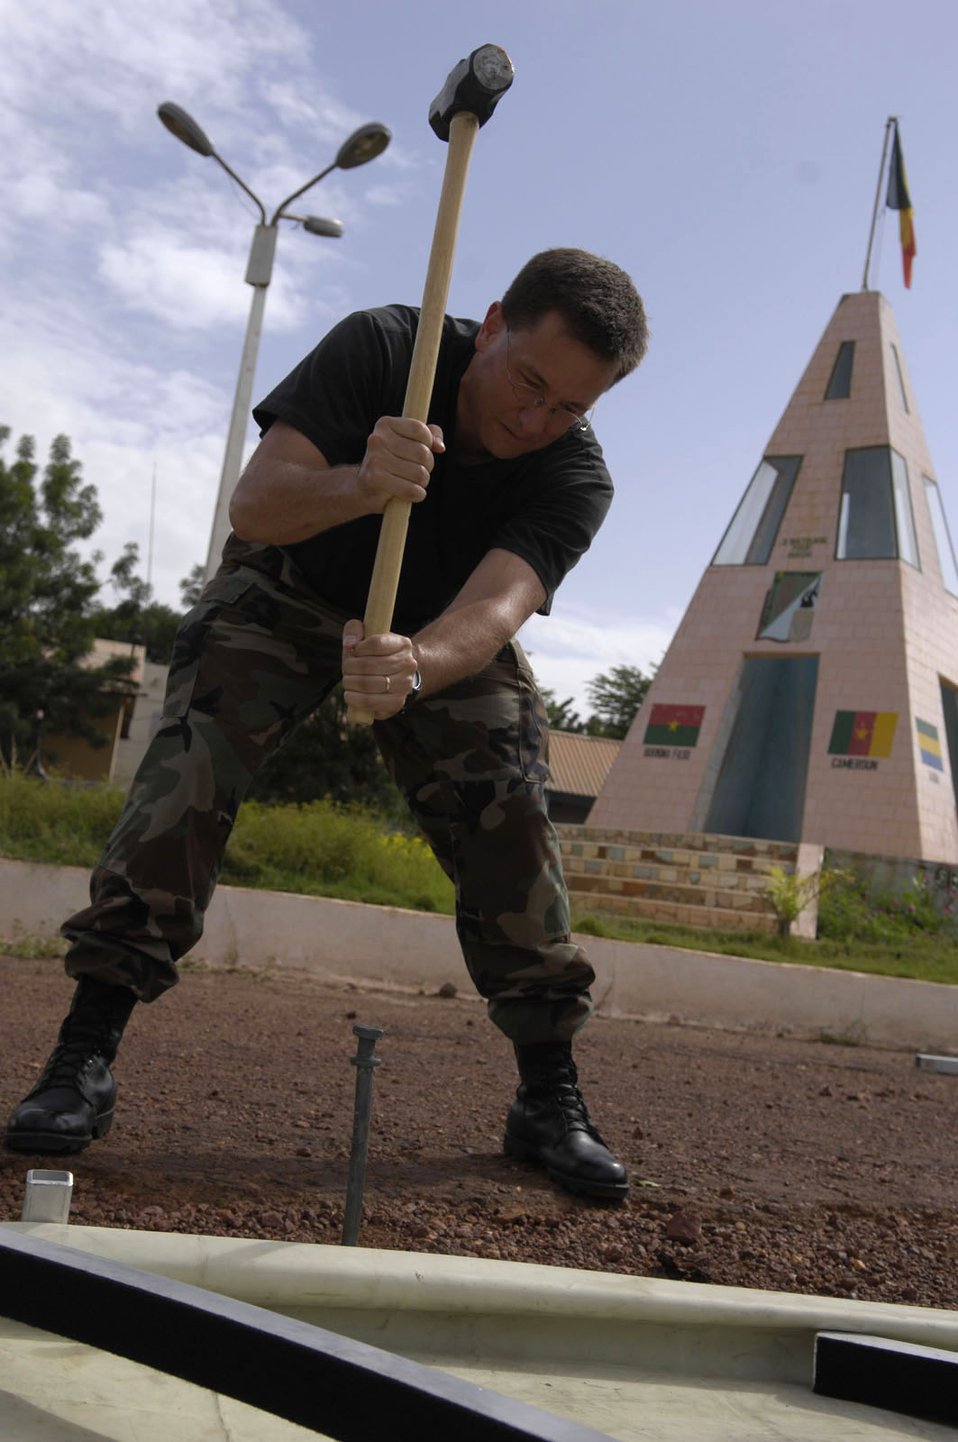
Preparing for MEDFLAG 08

Maj. Mark Reiker pounds stakes into the ground while setting up an expeditionary medical support tent for MEDFLAG 08 July 13. More than 90 servicemembers deployed to Bamako, Mali, July 11 for MEDFLAG 08, a multinational medical training exercise designed to enhance medical capabilities and readiness for U.S. and African Forces. Major Reiker is a pediatrician deployed from the 31st Medical Group, Aviano Air Base, Italy.